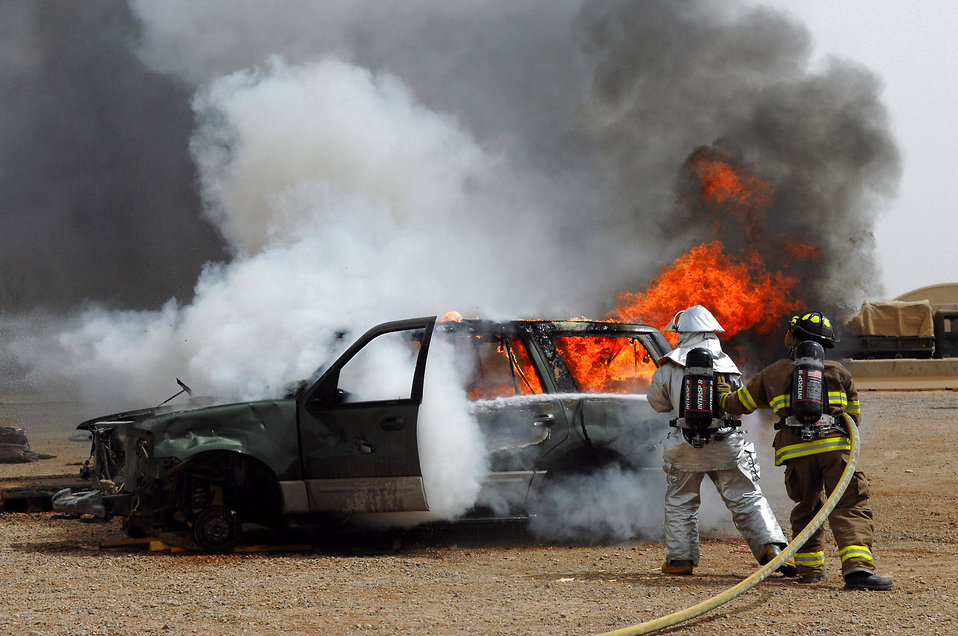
Bustin' in

Firefighters from the 332nd Expeditionary Civil Engineer Squadron and 8th Ordnance Company put out a vehicle fire during vehicle extrication training April 5 at Balad Air Base, Iraq. During the training, Army and Air Force firefighters honed their abilities to rescue people trapped in vehicles and other confined spaces. Working jointly allows the firefighters to coordinate their efforts when responding to emergency situations.